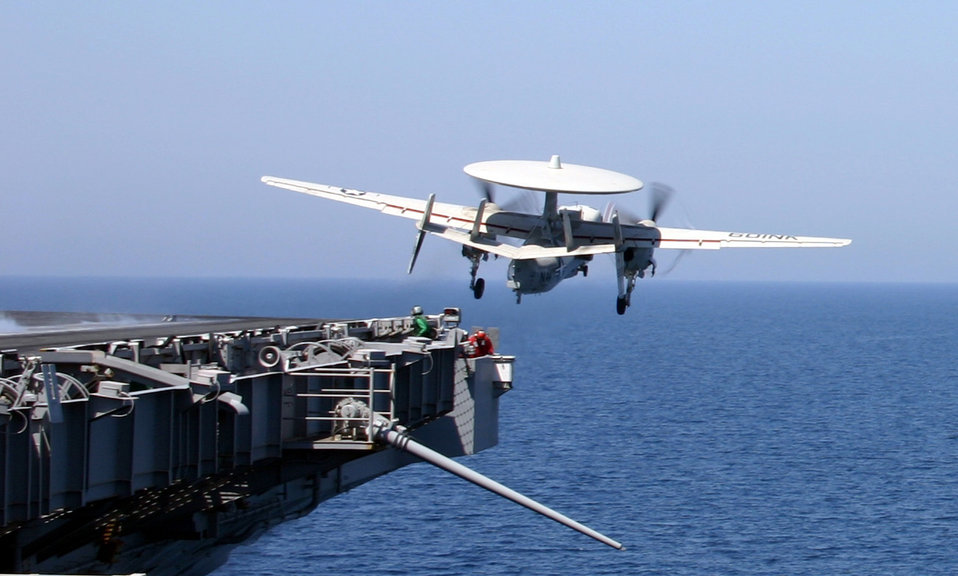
Same fight by land or sea

An E-2C Hawkeye launches from the flight deck of the USS Ronald Reagan on Friday, March 31, 2006. The aircraft is deployed to the Arabian Gulf in support of operations Iraqi Freedom and Enduring Freedom.